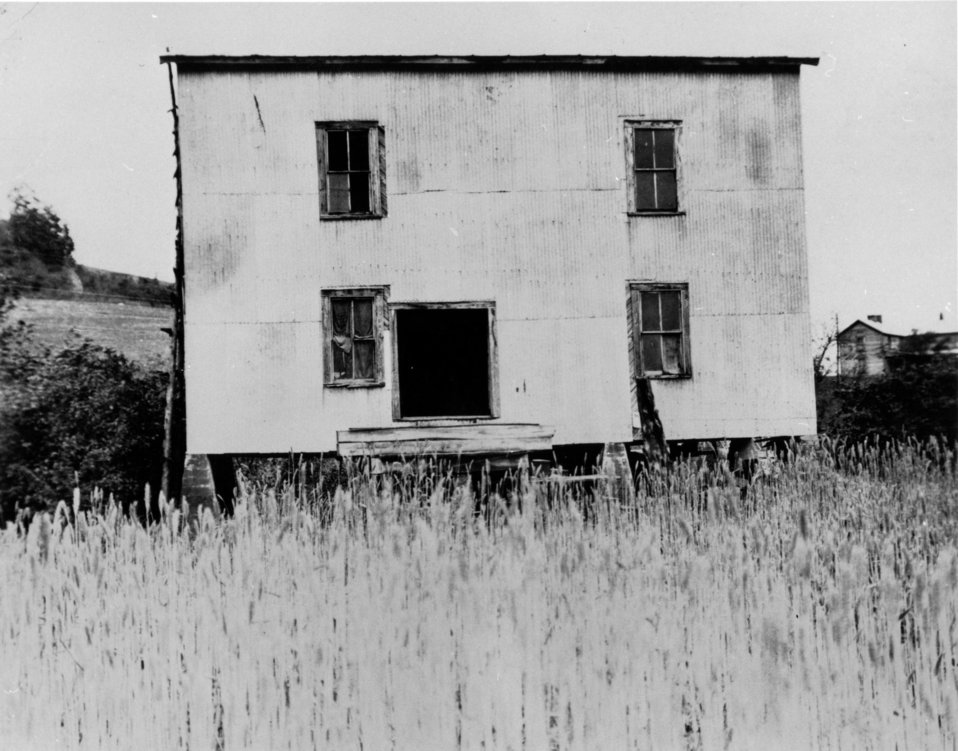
Early settlers at Oak Ridge